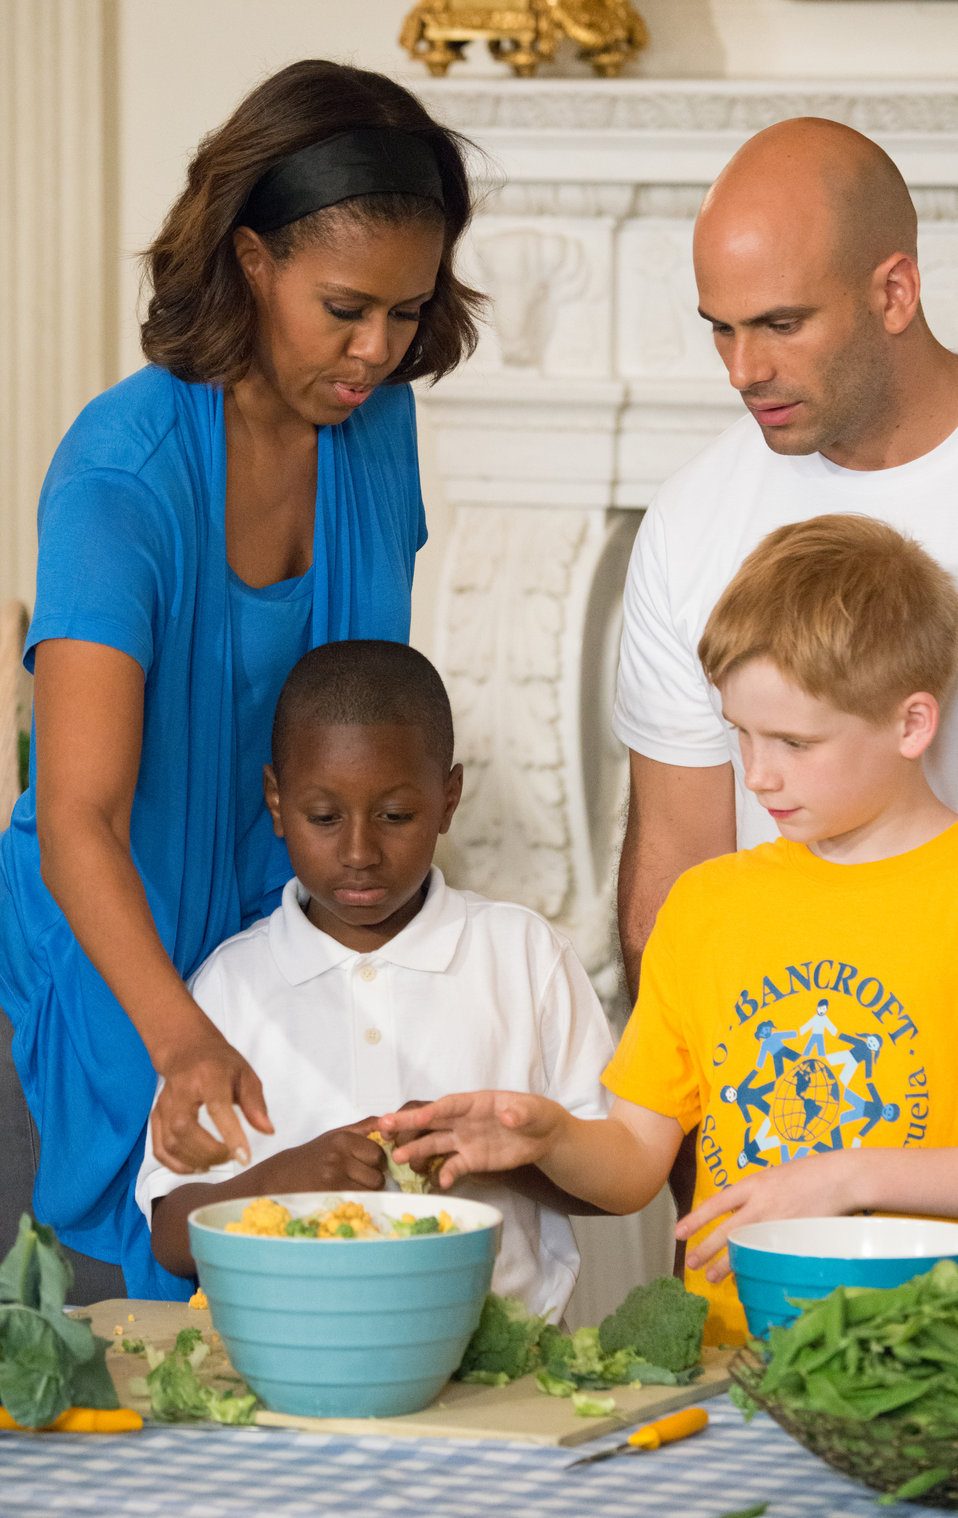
First Lady Michelle Obama and White House Executive Chef Sam Kass join Washington, D.C. students from Cleveland Elementary School, Friendship Public Charter School, Kimball Elementary School, Bancroft Elementary School, Harriet Tubman Elementary School, who helped plant the garden in the spring, make lunch from this year’s summer crop with the help of White House chefs and visiting school nutrition directors from Orlando, FL, Dallas, TX, and West Virginia in the State Dining Room of the White House in Washington, D.C. on Thursday, Jun. 12, 2014.